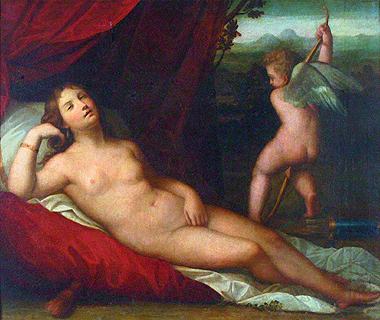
Alessandro Varotari